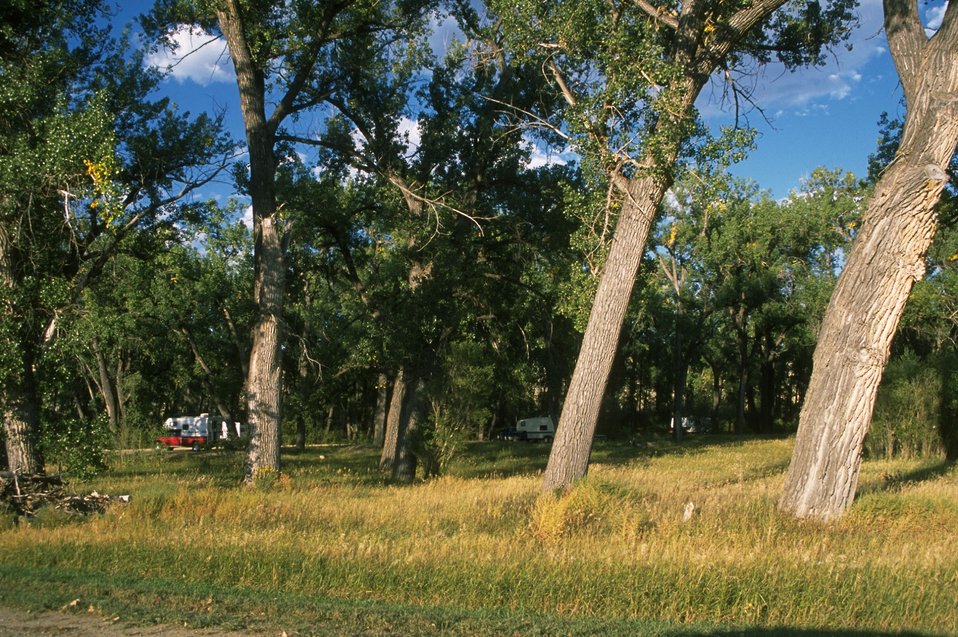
Kipp Recreation Area